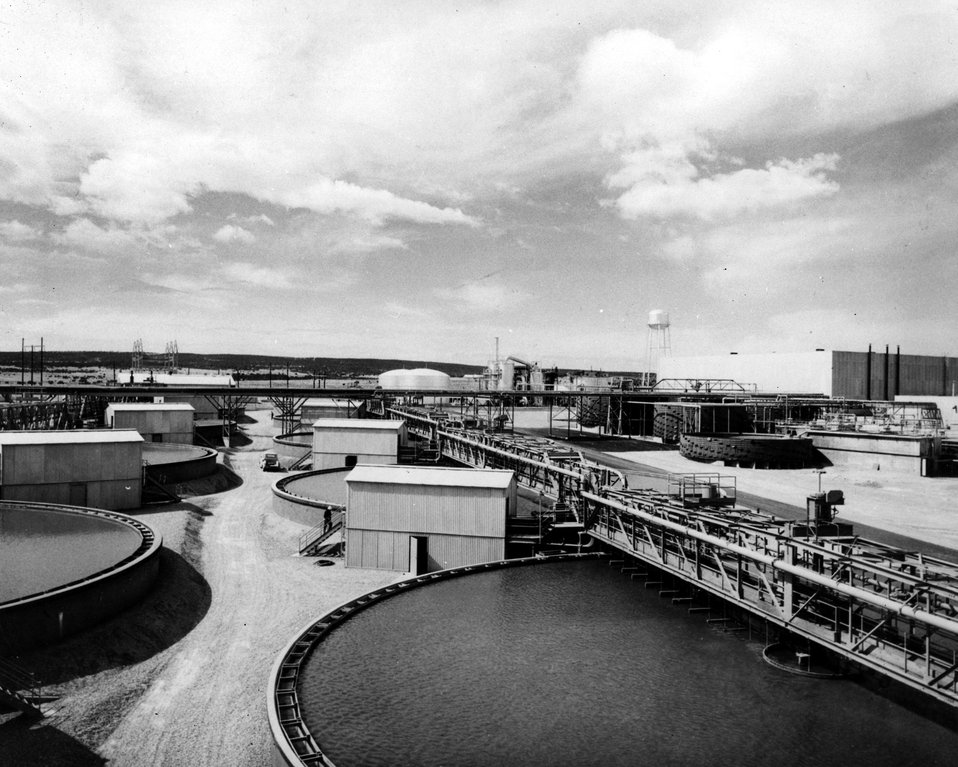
Thickener tanks at the Kermac mill. c. 1964